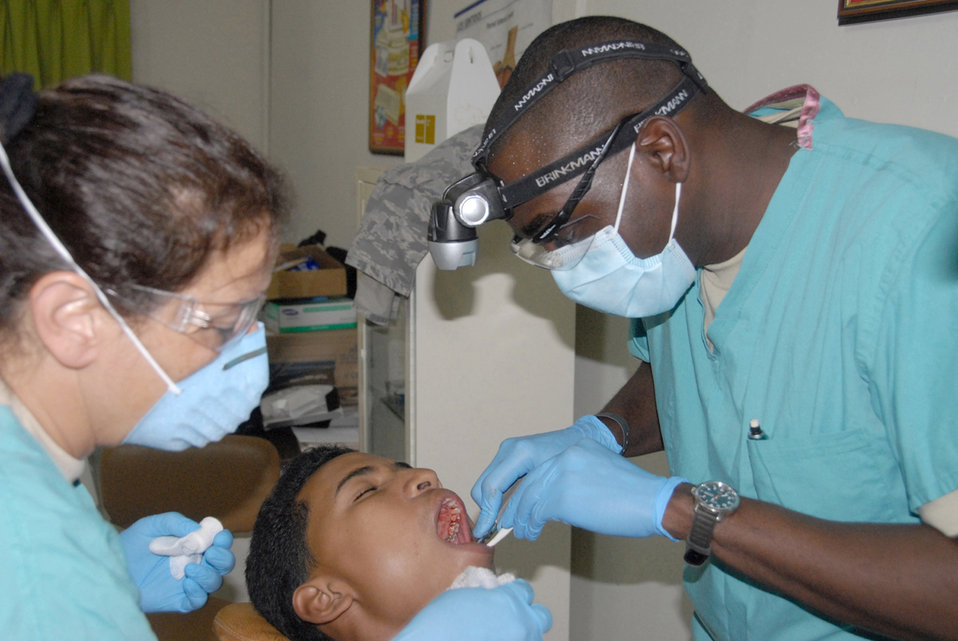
Team provides medical care in Dominican Republic

Capt. (Dr.) Jonathan Johnson extracts a tooth during a medical readiness exercise May 24, 2010, in the Dominican Republic. A team of 39 medical specialists from Air Force Reserve Command is providing medical care to four towns in the Puerto Plata region of the country. Doctor Johnson is a dentist from the 622nd Aeromedical Staging Squadron at Robins Air Force Base, Ga.